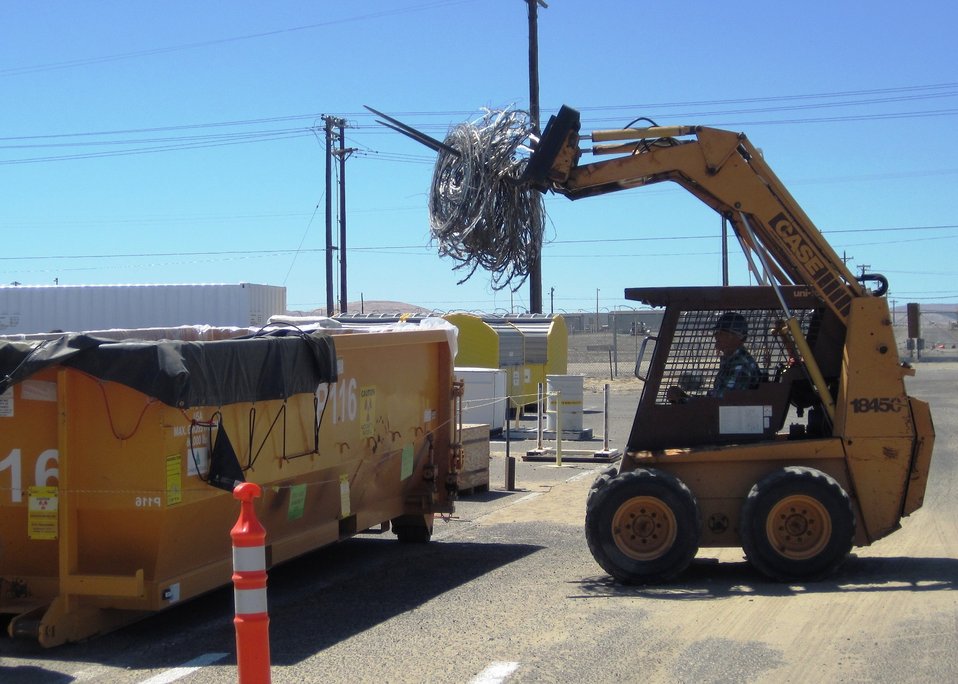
Richland - Plutonium Finish Plant Cleanup

Recovery Act workers removed a multi-layer security barrier at the Plutonium Finishing Plant after the last of nuclear material was removed from the facility in 2009. Workers removed razor wire fencing and concrete vehicle barriers and prepared inspection stations for demolition.